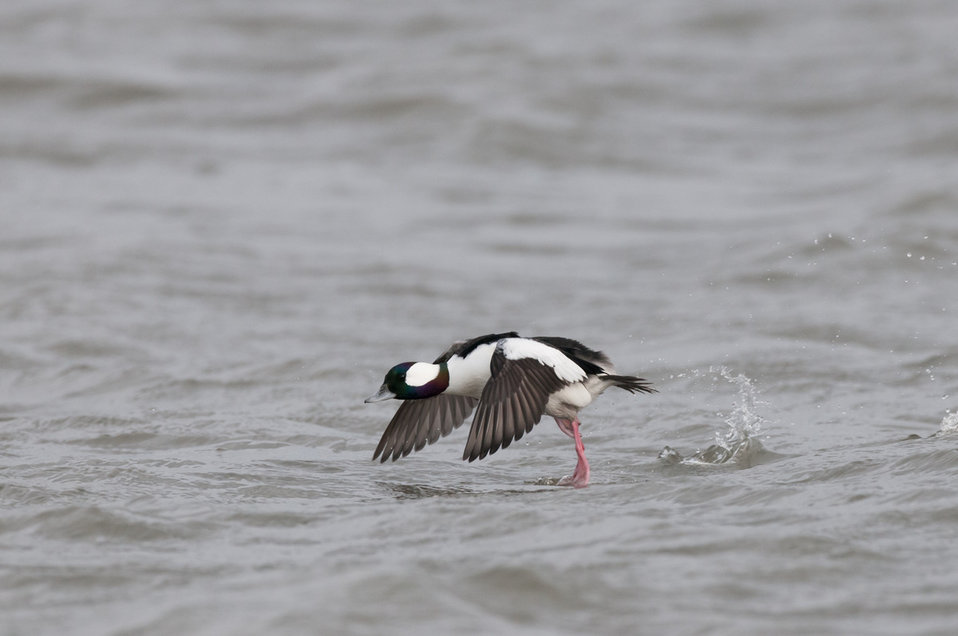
Bufflehead

Photographed at Sachuest Point National Wildlife Refuge.